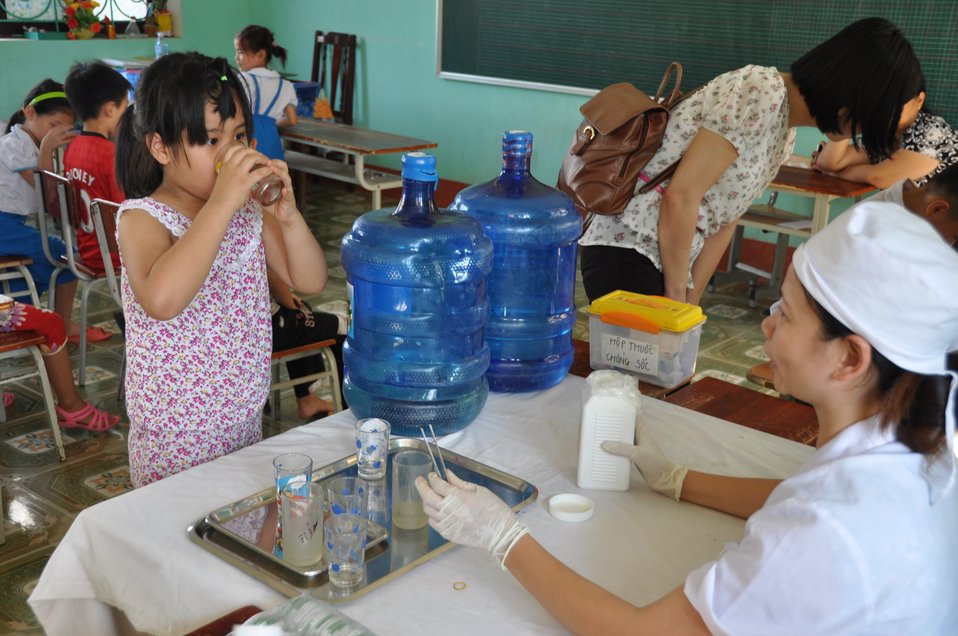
USAID supports deworming education and medication distribution in Bac Giang Province

May 20, 2013